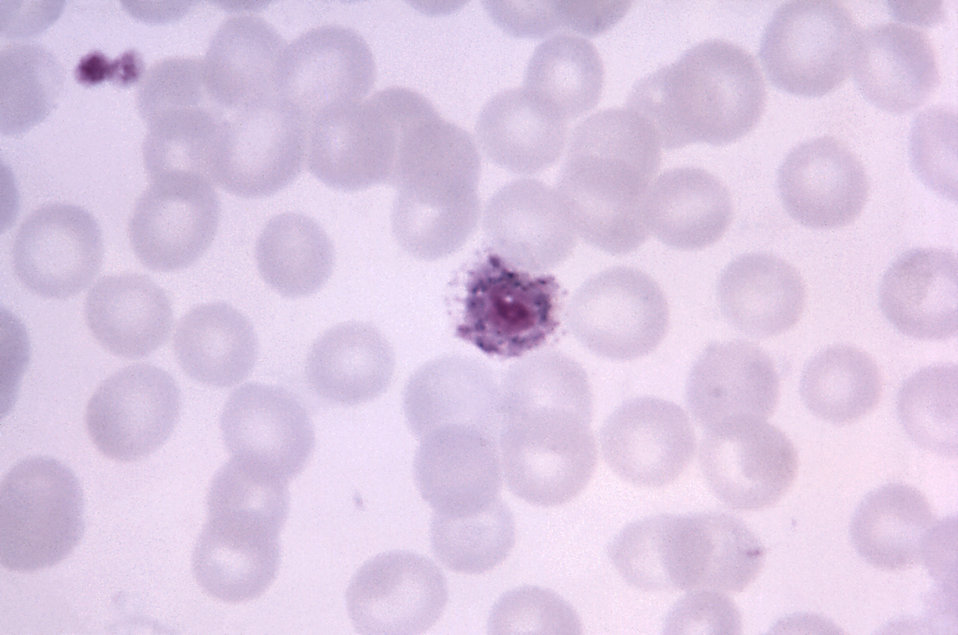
This thin film micrograph depicts a Plasmodium vivax microgametocyte with blue cytoplasm; Mag. 1125X.